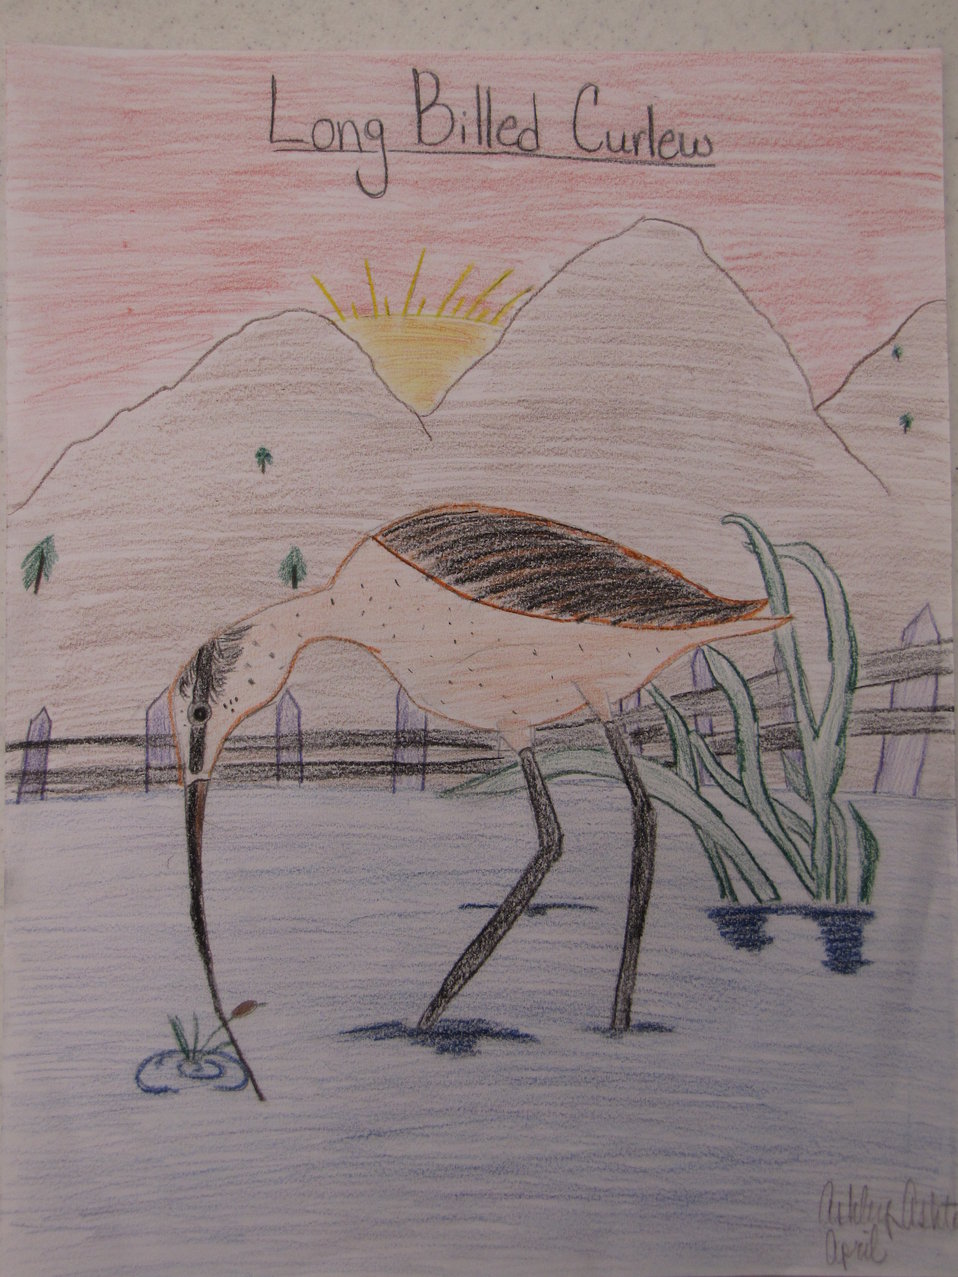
Long-billed curlew, by Ashley Ashton - 6th grade. One of the class winners for the annual Bird Banner competition. Community school kids draw and color migratory birds and 90 of the winners from over 1000 entries are turned into poster-sized banners to hang down main street of Brigham City this summer.